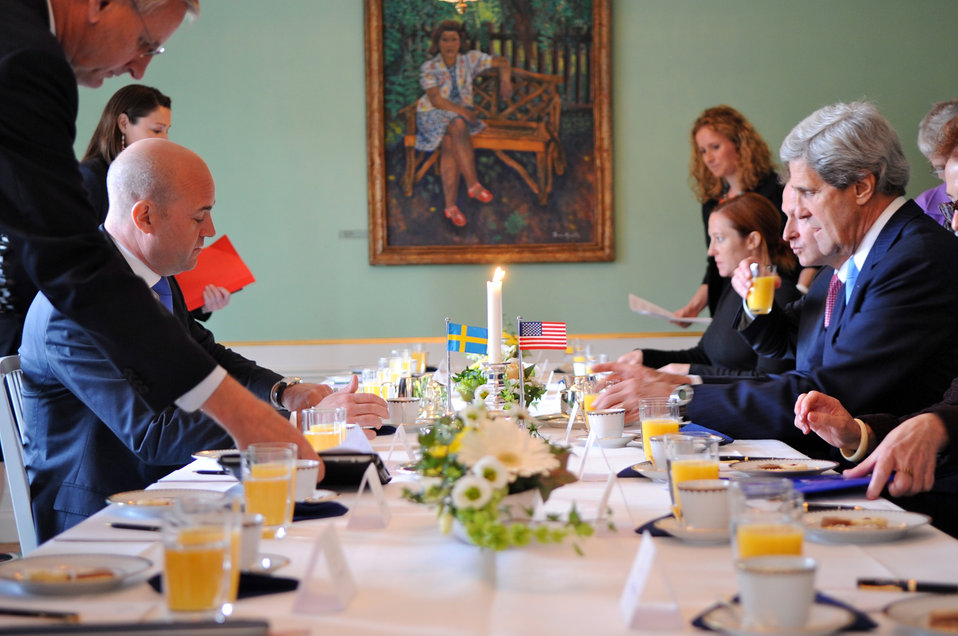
Secretary Kerry Meets With Swedish Prime Minister Reinfeldt

U.S. Secretary of State John Kerry meets with Swedish Prime Minister Fredrik Reinfeldt on May 14, 2013 in Stockholm, Sweden.